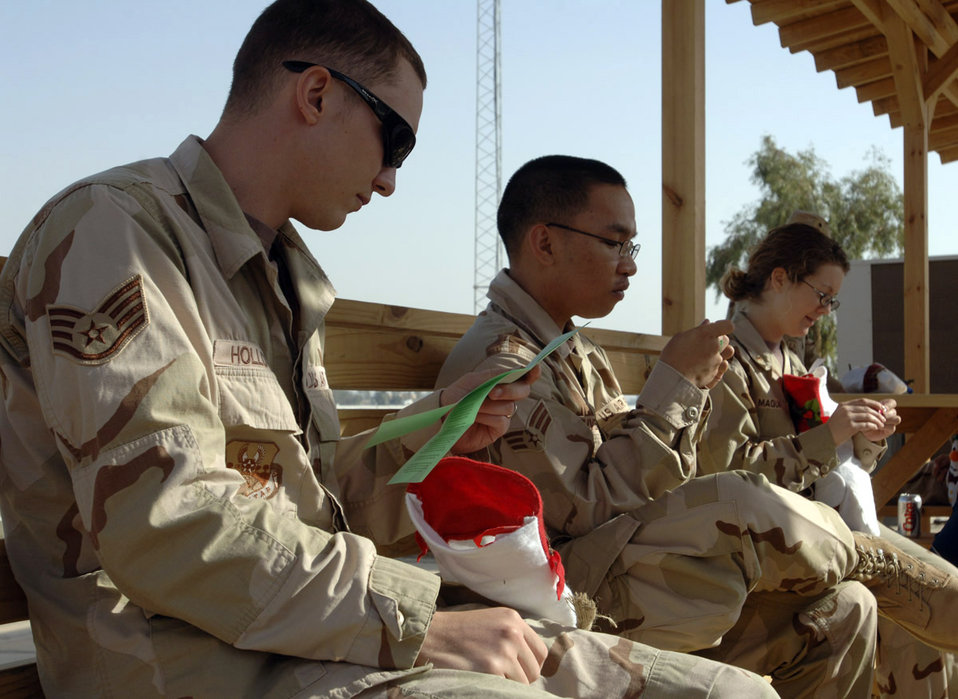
Christmas stockings

BALAD AIR BASE, Iraq (AFPN) -- (Left to right) Staff Sgt. Anthony Holloway, Senior Airman Class Rocky Tuvera and 2nd Lt. Shannon Maquire open stockings during the 332nd Expeditionary Communications Squadron Christmas party.